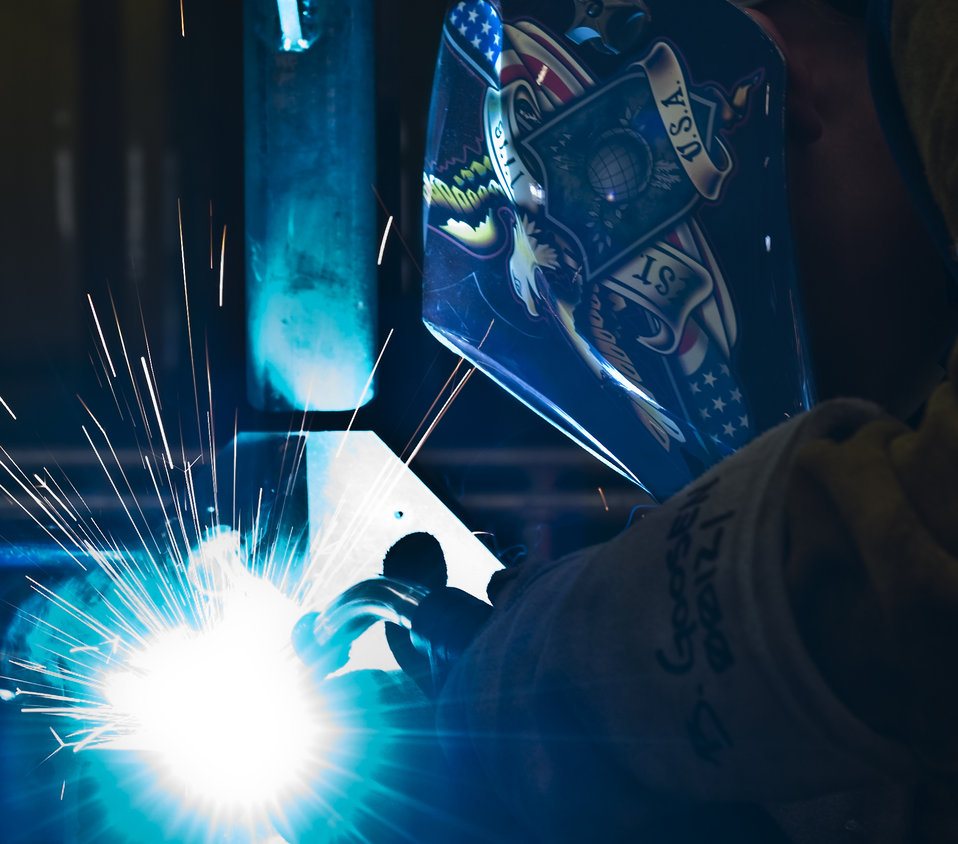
Heavy Metal Airman

Airman 1st Class Brooke Goosen, 7th Equipment Maintenance Squadron, welds a Y-stand for holding munitions Aug. 14, 2012, at Dyess Air Force Base, Texas. Goosen is the only female out of 28 Airmen in the Dyess metal shop and has more than seven years experience with welding.